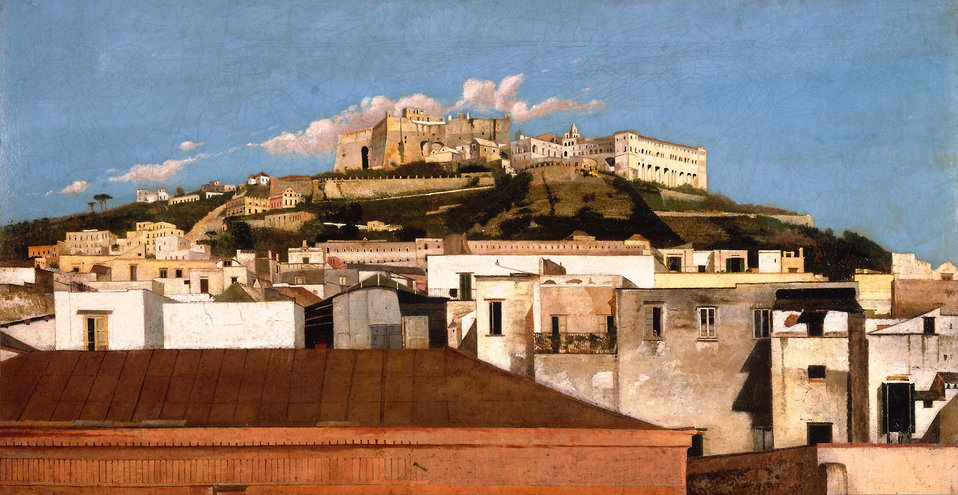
A View of Certosa di San Martino with the Castel Sant' Elmo, Naples by Thomas Jones